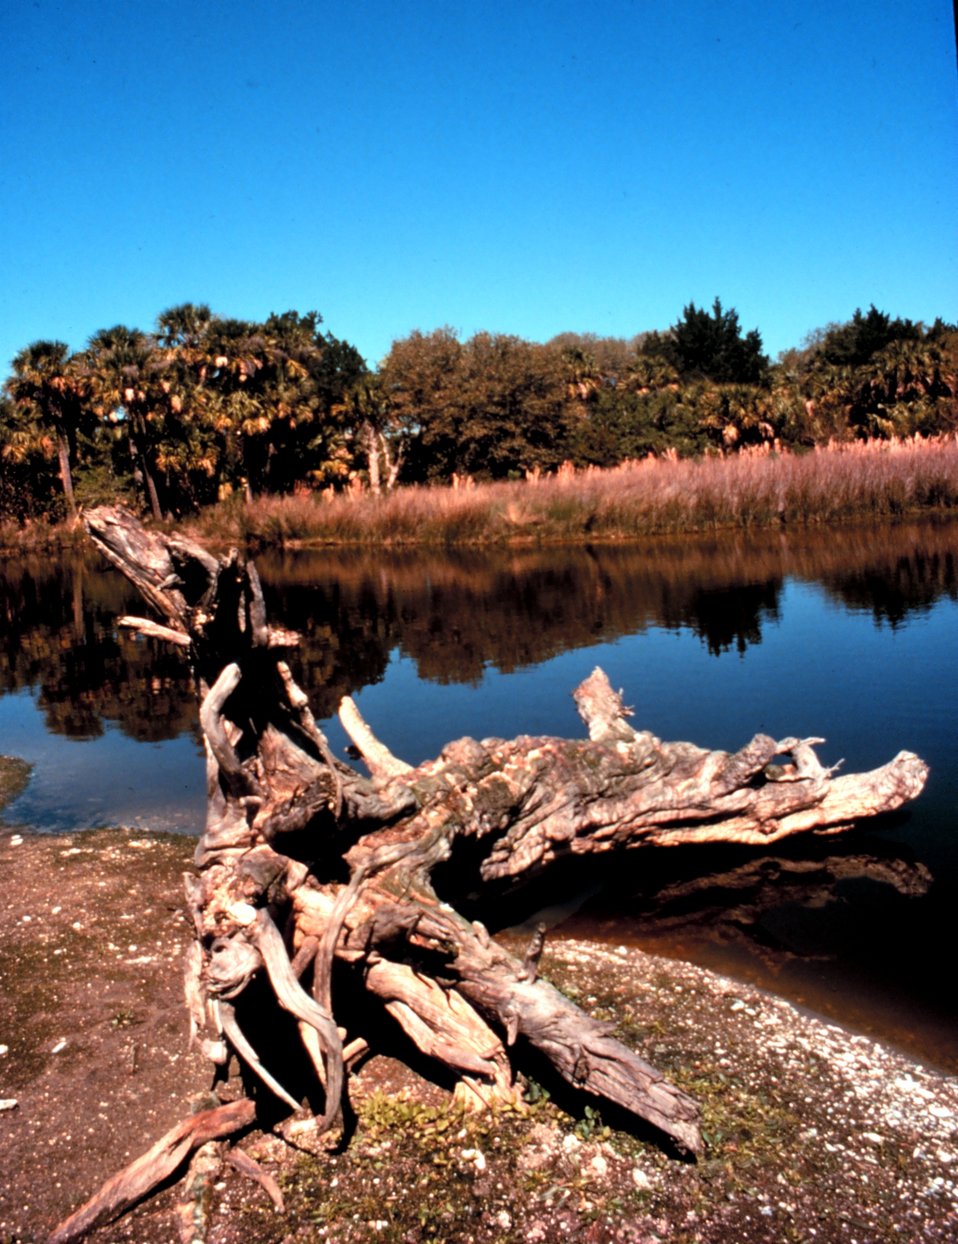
ACE Basin National Estuarine Research Reserve. A natural tidal pond on Otter Island.